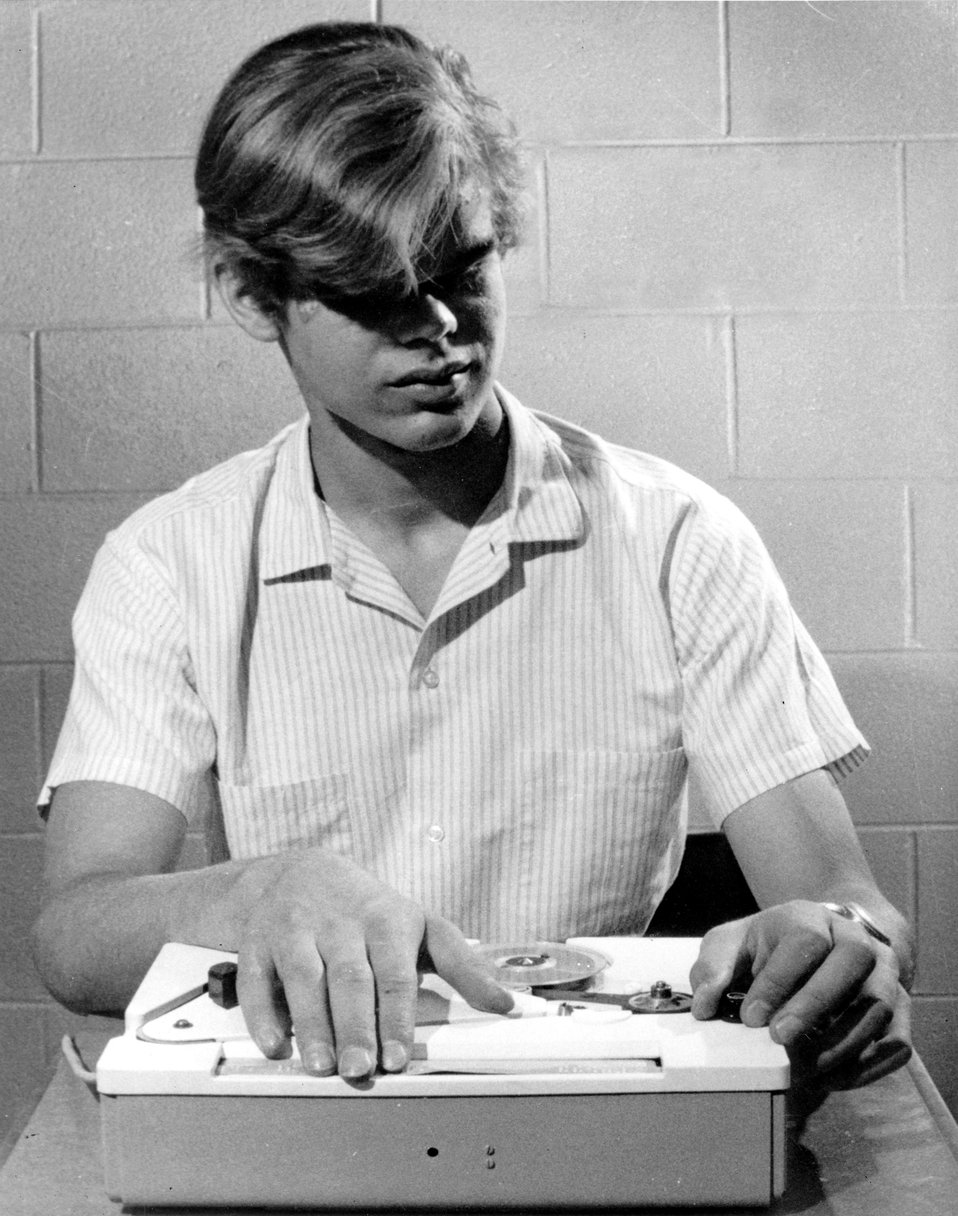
Argonne Braille Machine. c.1974